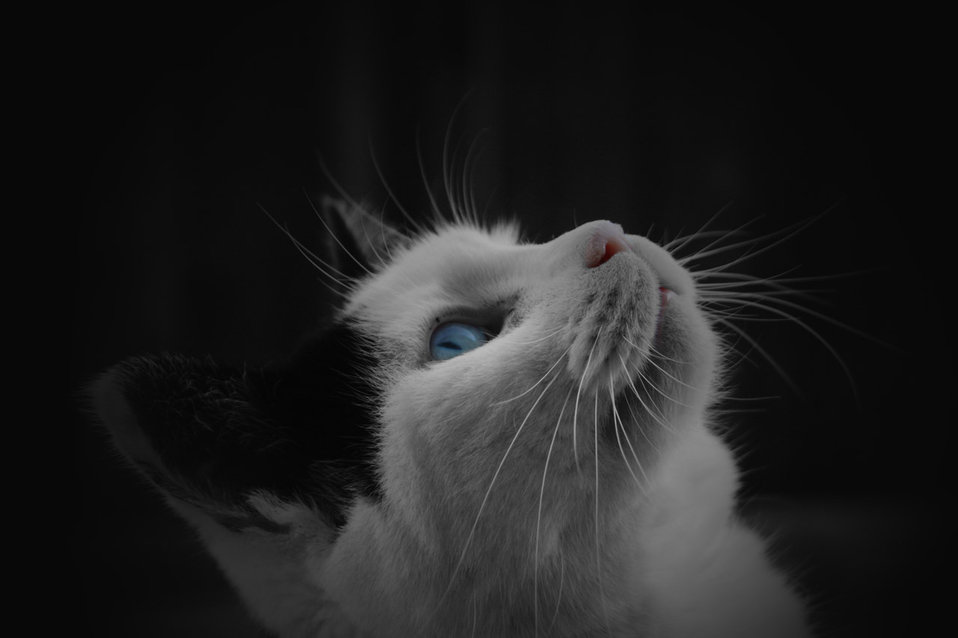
Cat with blue eyes.